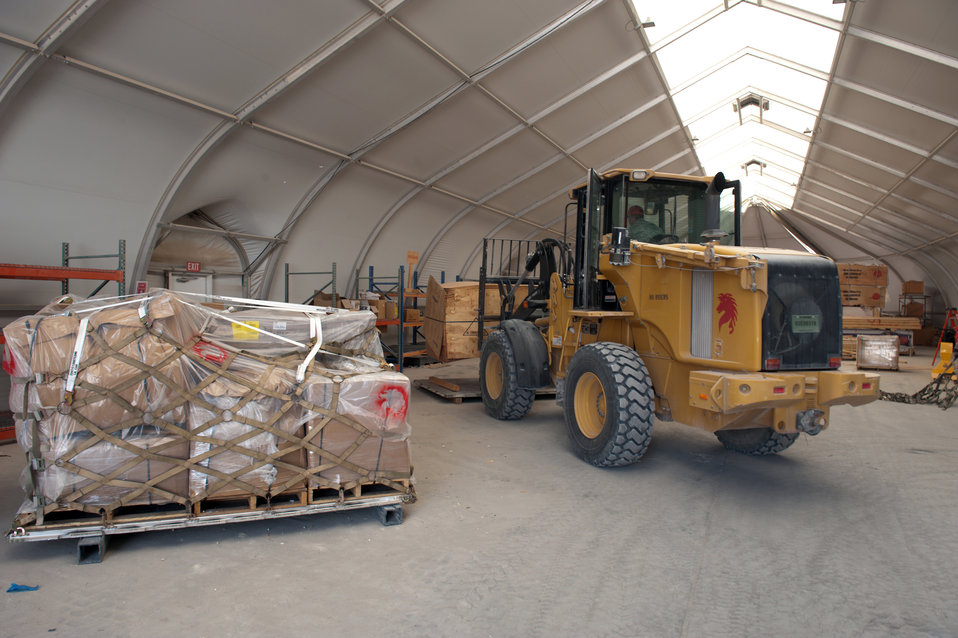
Airmen build bare bases 1 pallet at a time

Staff Sgt. Dennis Urruchi lowers a stack of wood to be palletized and shipped Sept. 15, 2009, at an air base in Southwest Asia. Sergeant Urruchi is a 1st Expeditionary RED HORSE Group electrical craftsman. He along with fellow servicemembers of the logistics and pallet build-up team, support all RED HORSE operations downrange by obtaining and shipping required equipment for mission success. Sergeant Urruchi is deployed from Peterson Air Force Base, Colo.